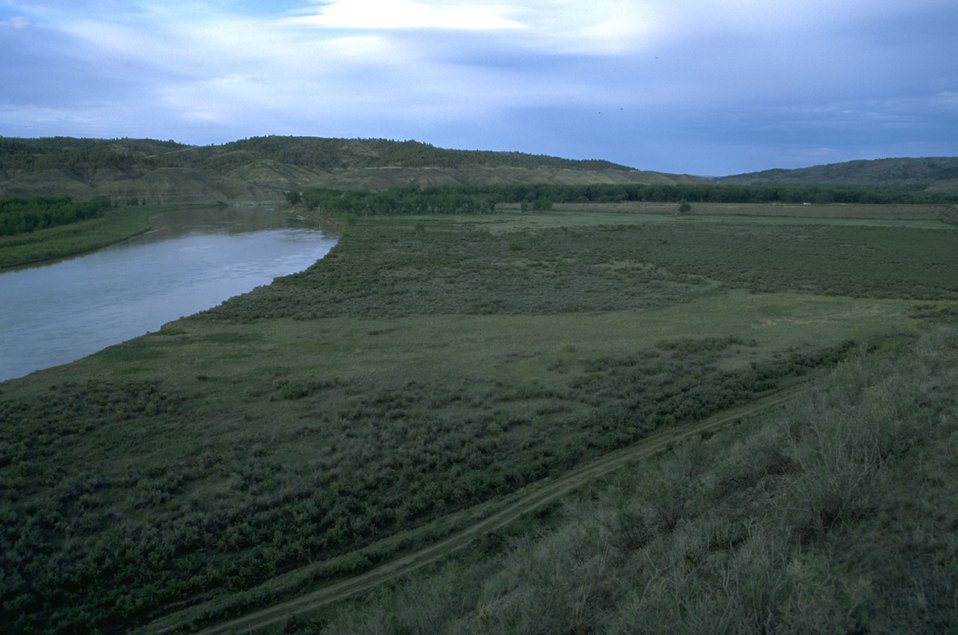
Grasslands around the Missouri River